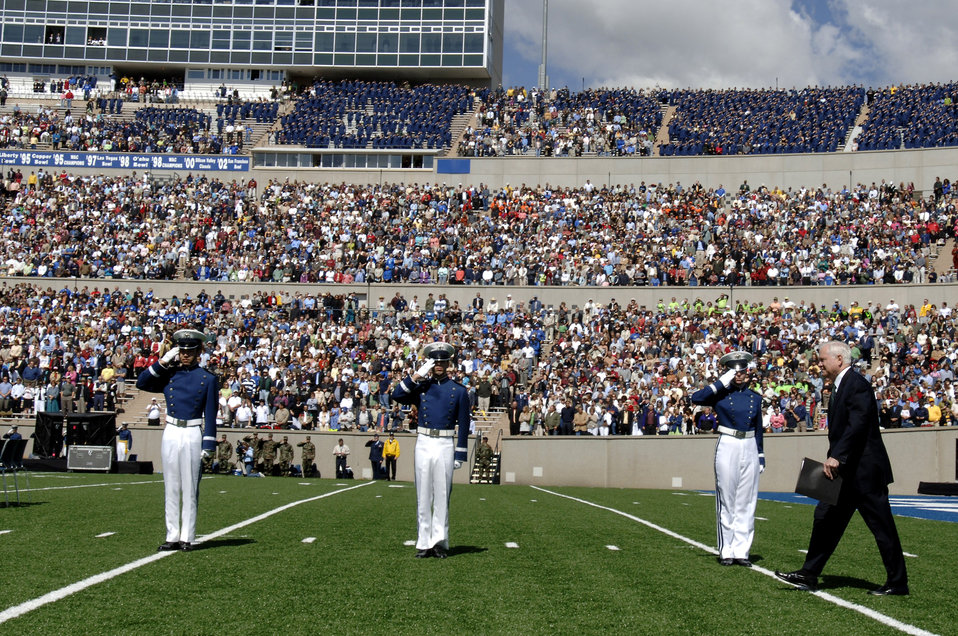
'Stay true' SECDEF tells Air Force Academy grads

Secretary of Defense Robert M. Gates walks across the Falcon Stadium field May 30 at the start of the 2007 U.S. Air Force Academy graduation ceremony in Colorado Springs, Colo. Dr. Gates was the commencement speaker.